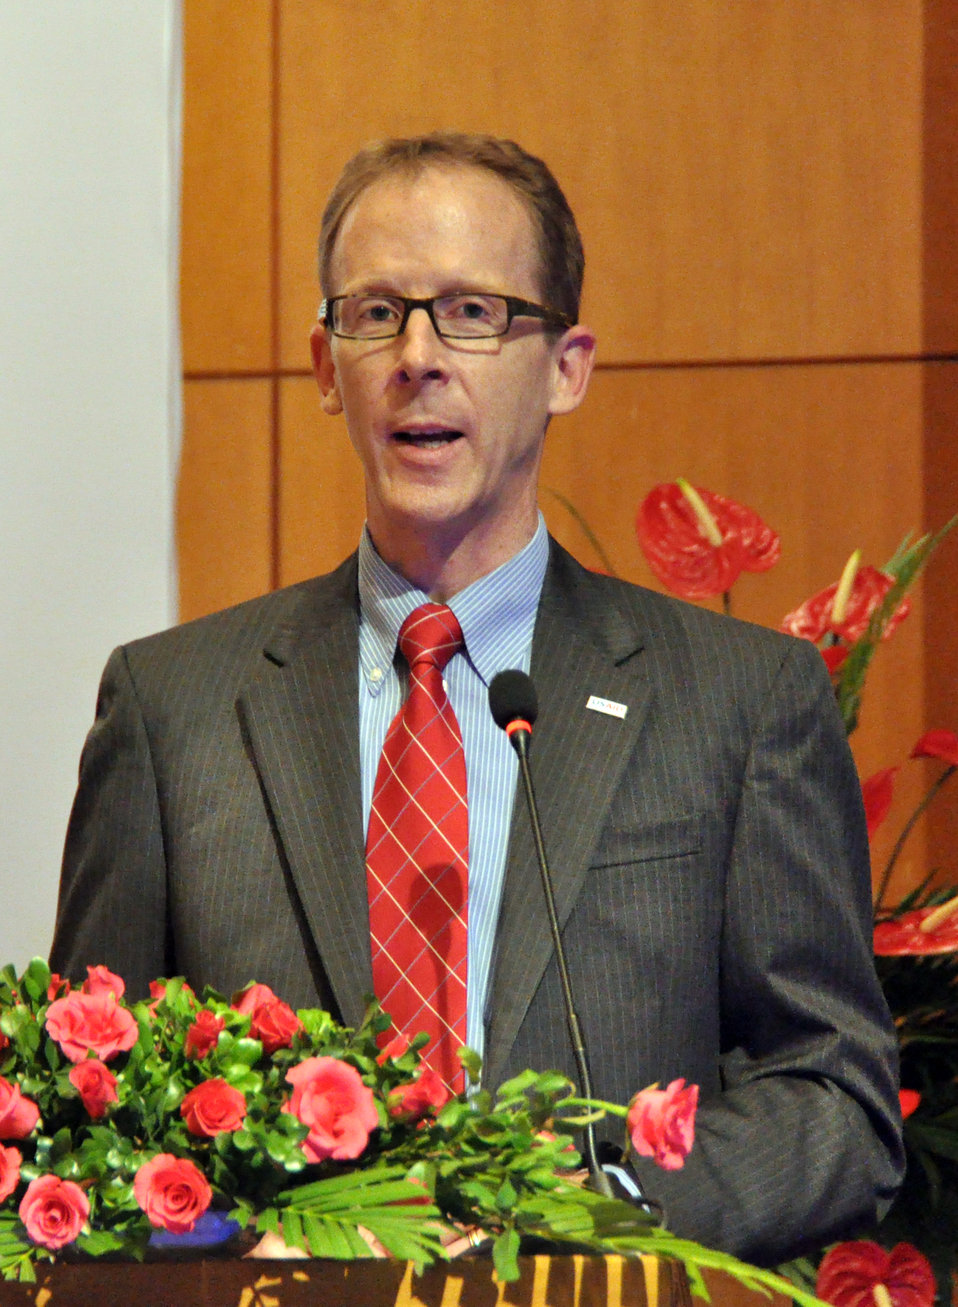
USAID Mission Director Joakim Parker speaks at the USAID Support for Trade Acceleration Project (USAID STAR Plus) Closing Ceremony

Hanoi, August 26, 2013.